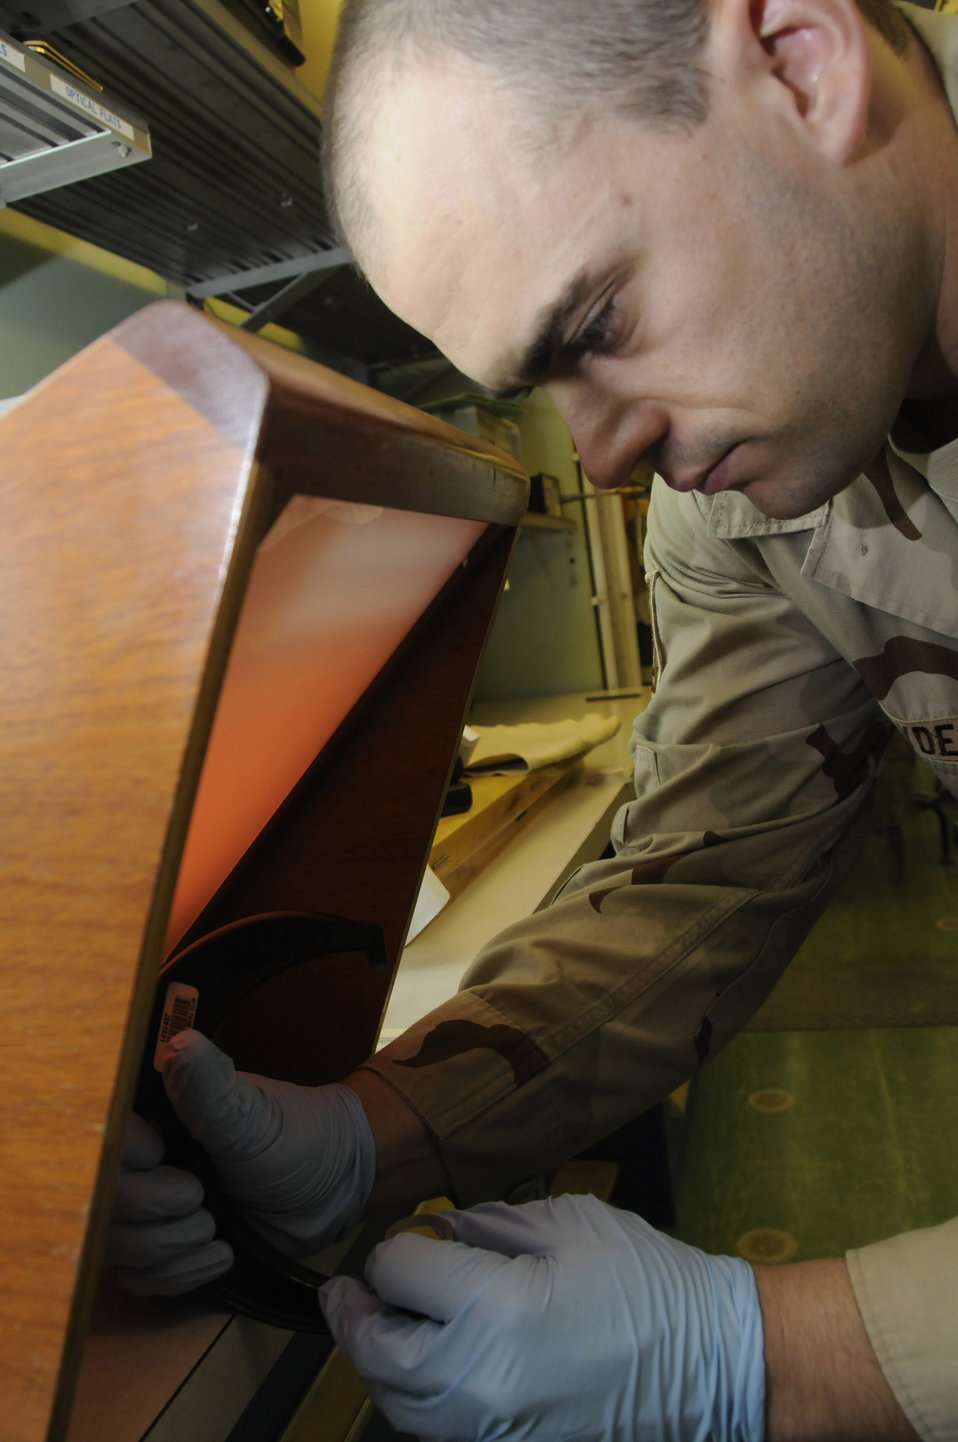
PMEL Airmen deliver precision to warfighters

Tech. Sgt. Kevin Clyde calibrates the flatness of a micrometer spindle under a monochromatic light Aug. 4 using an optical flat. Sergeant Clyde is with the 379th Expeditionary Maintenance Squadron's Precision Measurement Equipment Laboratory at an air base in Southwest Asia. He is deployed from Travis Air Force Base, Calif.